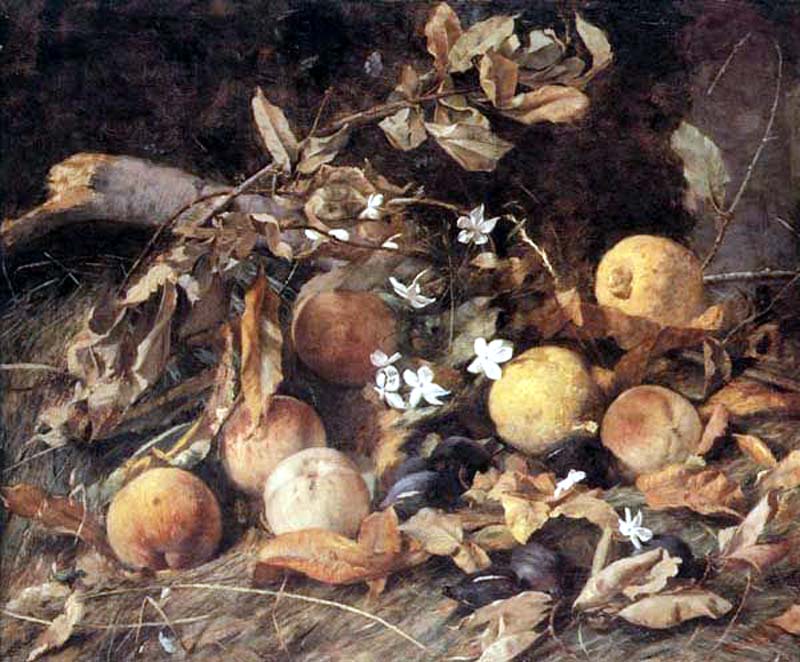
'Bodegón con frutas'